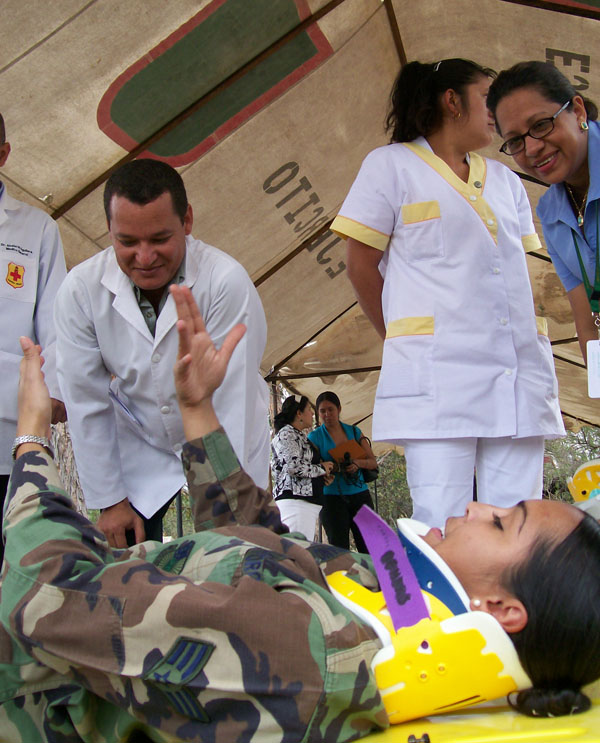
Honduras, American medics gather to share skills

Senior Airman Yaritza Liriana reviews proper litter transfer procedures for people with neck injuries while wearing a cervical spine collar to Honduran medical members during an medical information exchange April 6 at Hospital Militar Luis Alonso Discua in Honduras. Airman Liriana is a Joint Task Force-Bravo medical technician.